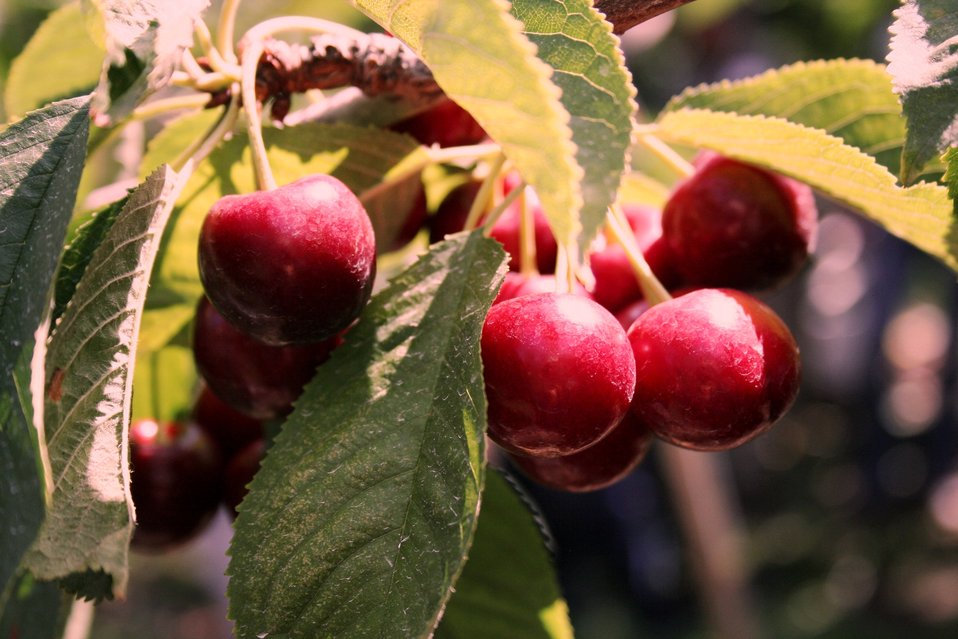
On the Road with Mike Taylor

Cherries at Stemilt Growers in Wenatchee, WA. FDA Deputy Commissioner Michael Taylor (left) and colleagues started a five-day tour of the Pacific Northwest on Sunday, Aug. 11, 2013 -- visiting Idaho, Oregon and Washington -- to get a first-hand look at produce production and irrigation operations, and to discuss the proposed Produce Safety Rule with growers, food industry representatives and state officials. For more about Mike's multi-region tour, read these FDA Voice blog posts:

• Hearing the Concerns of Maine Growers Striving for Agricultural Diversity
• On the Road with Mike Taylor: Touring the Pacific Northwest
• On the Road with Mike Taylor, Day 2: Frank Talk in Farm Country
• On the Road with Mike Taylor, Day 3: Families and Partnerships
• On the Road with Mike Taylor, Day 4: Looking to the Future